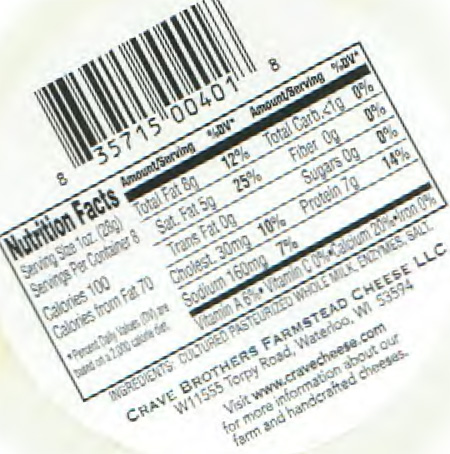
RECALLED – Cheese

July 3, 2013 – Product Recall – Crave Brothers Farmstead Cheese Recalls Les Freres Cheese Products.